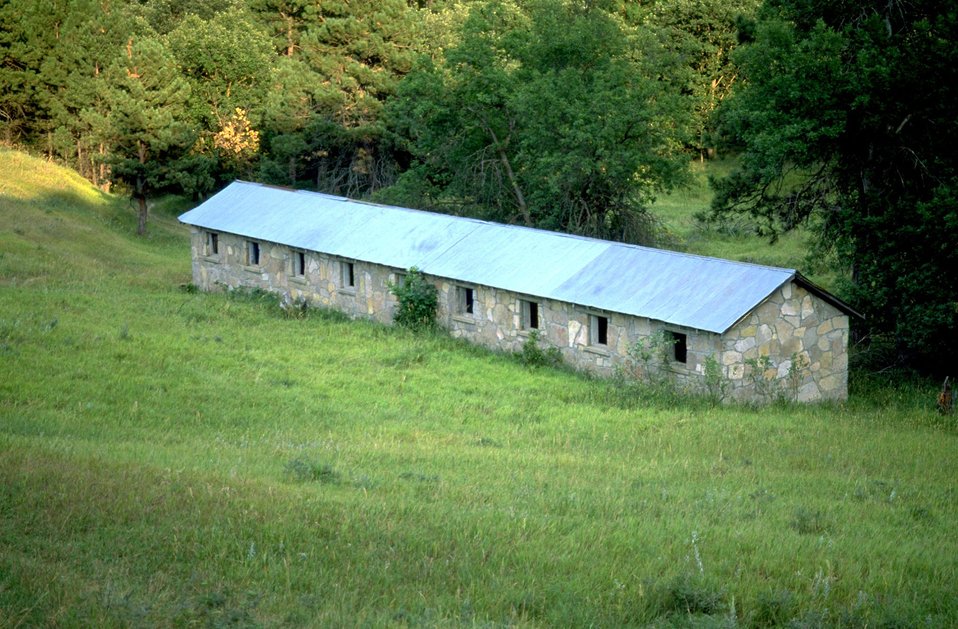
Long stone building at the south end of Fort Meade